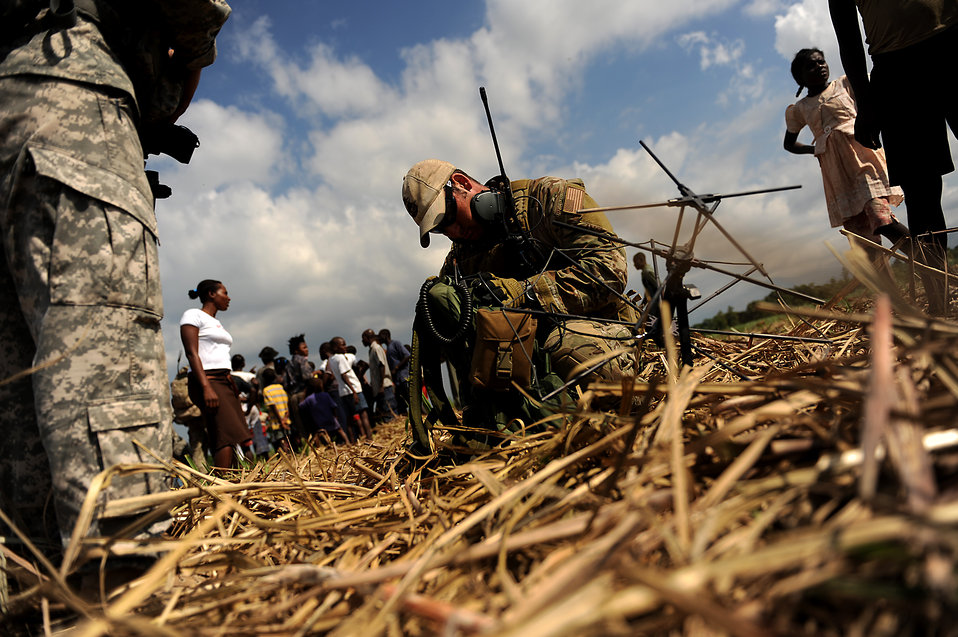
Joint team conducts drop zone survey

A U.S. Air Force combat controller prepares to contact the special tactics operation center by radio while conducting a drop zone survey in Port-au-Prince, Haiti, Jan. 24, 2010, during Operation Unified Response.